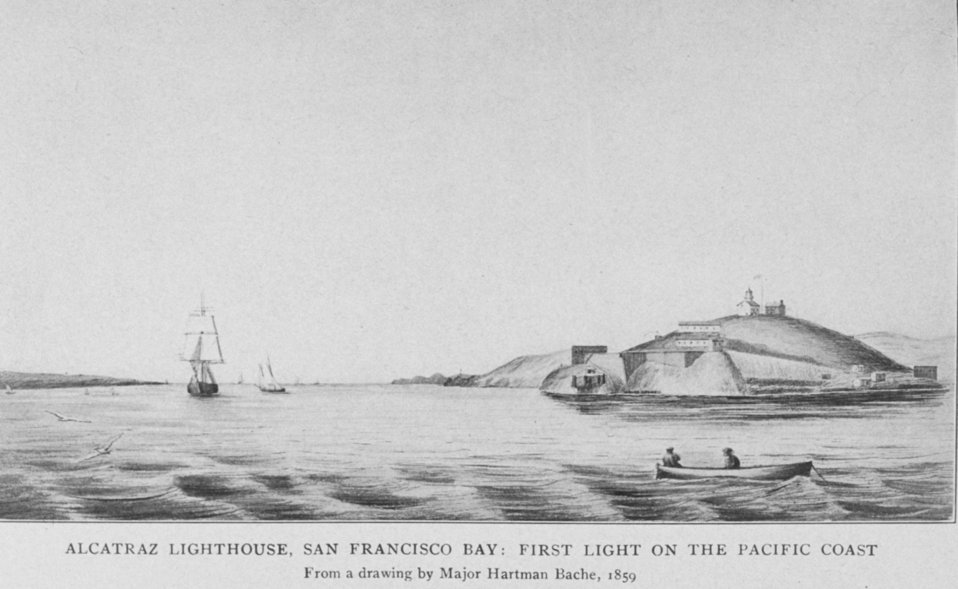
Alcatraz Lighthouse, San Francisco Bay: First Light on the Pacific Coast. From a drawing by Major Hartman Bache, 1859. In: 'Lighthouses and Lightships of the United States' by George R. Putnam, p. 110, 1917. Houghton Mifflin and Company, Boston. Library Call No. 527.7 P98.